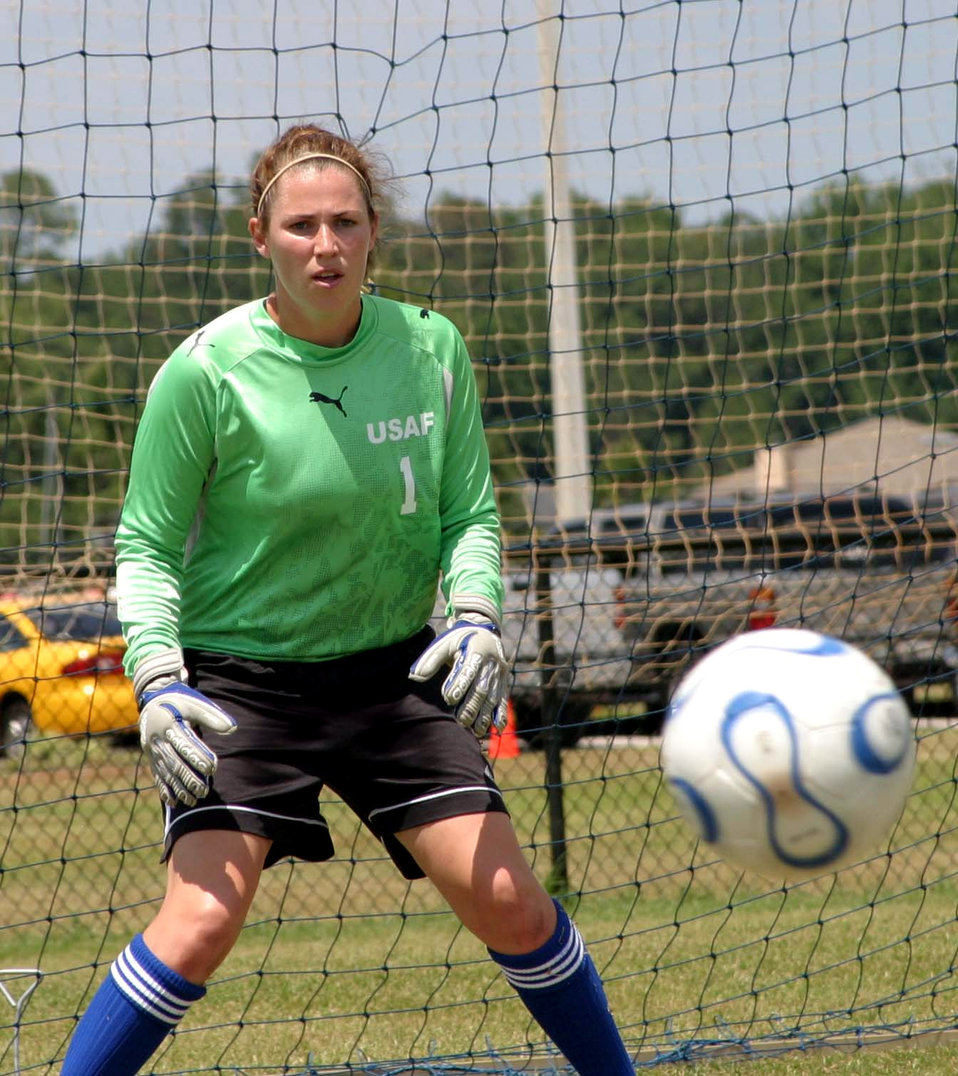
Air Force women repeat as soccer champions

Jennifer Wolf blocks a shot during the 2006 armed forces women's soccer championship at Naval Station Mayport, Fla. The Air Force team won the tournament, held May 2 to 8. Wolf, from Corpus Christi Naval Air Station, Texas, was selected to the all-tournament team.